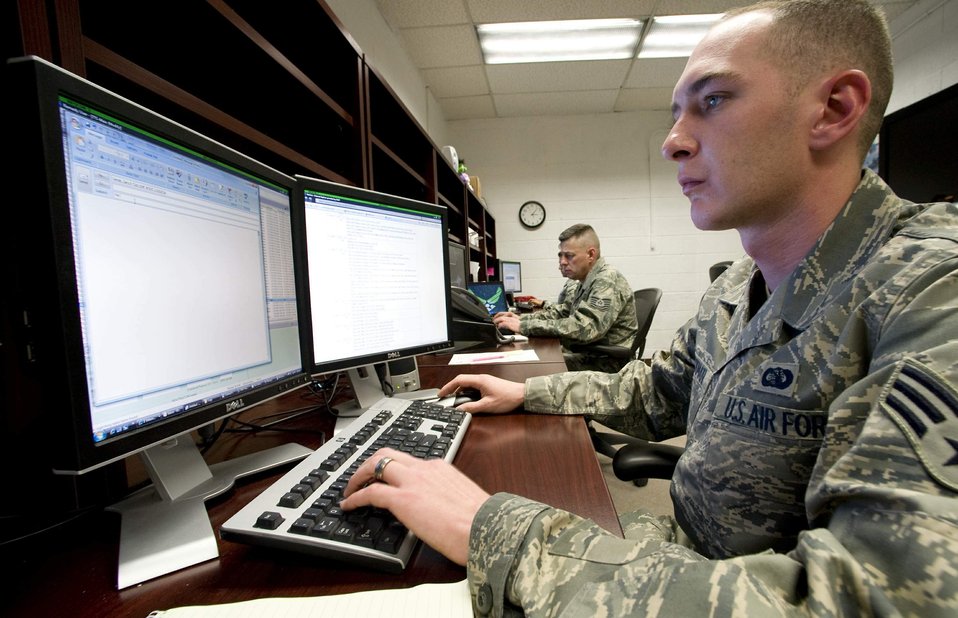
Aggressors prowl for Air Force information

Senior Airman Kyle Stackman (front) and Tech. Sgt. James Thoni with the Information Protection Operations office at Nellis Air Force Base, Nev., monitor the base's computer network to keep it secure. Airman Stackman is an information protection operations journeyman with the 99th Communication Squadron and Sergeant Thoni is an information protection operations technician on temporary duty to Nellis from the 28th Communications Squadron at Ellsworth AFB, S.D.